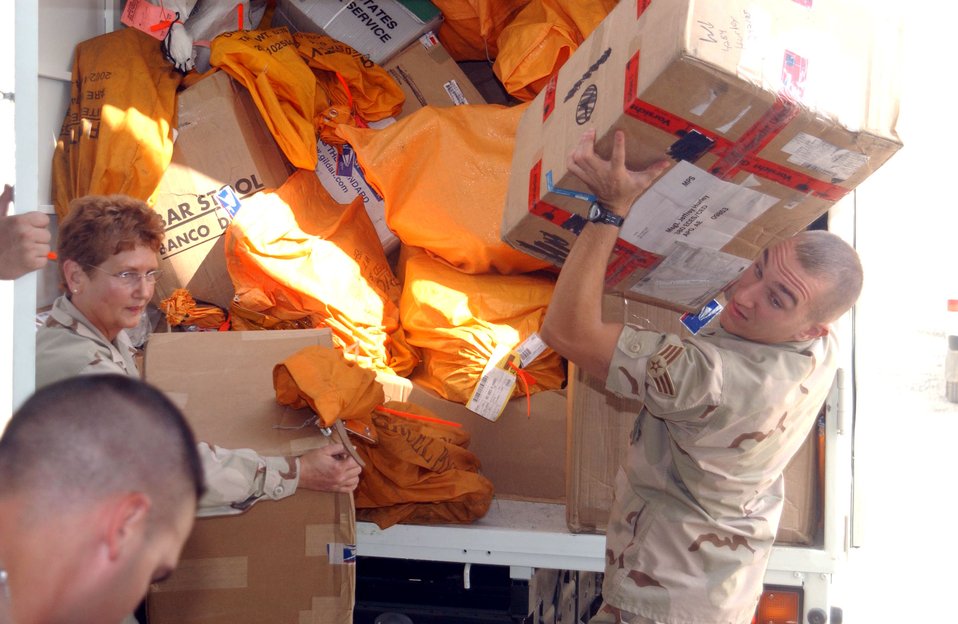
Mail's here

SOUTHWEST ASIA (AFPN) -- Senior Airman Michael Kohut and Master Sgt Denise Meyers unload mail from a mail truck at this forward-deployed location. Airman Kohut and Sergeant Meyers are part of a mail team responsible for receiving and sending mail for the 380th Air Expeditionary Wing's more than 1,400 servicemembers.